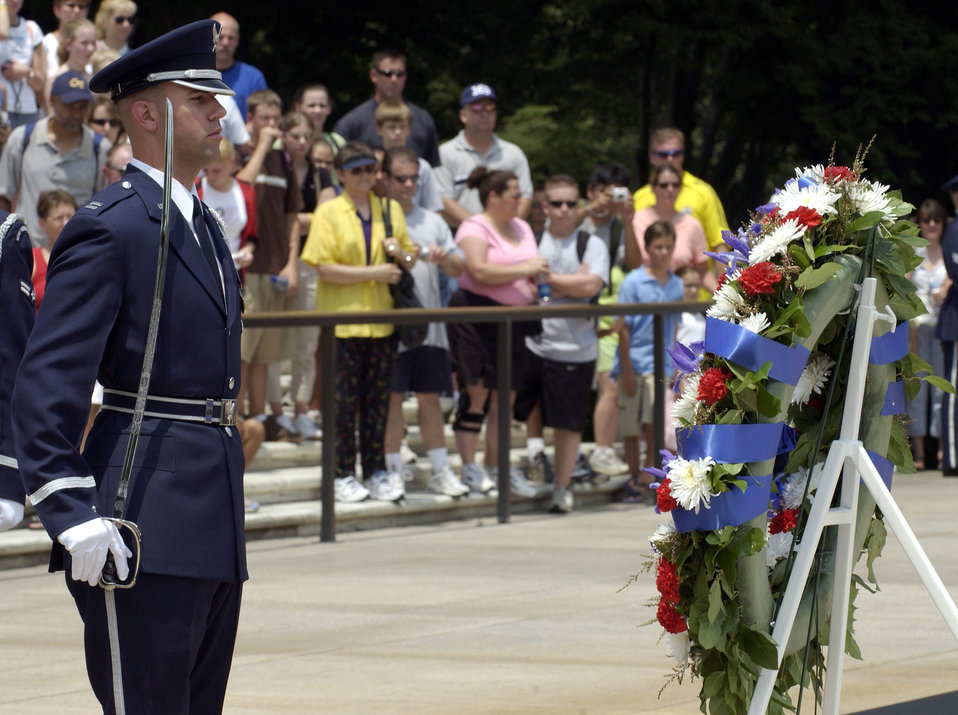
Veterans remembered

An Air Force Honor Guard Airman lays a wreath at Arlington National Cemetery's Tomb of the Unknown Soldier.